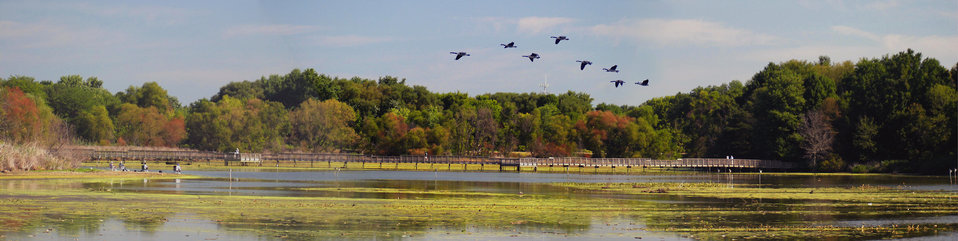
Heinz Refuge Boardwalk and Impoundment

John Heinz National Wildlife Refuge Boardwalk & Impoundment